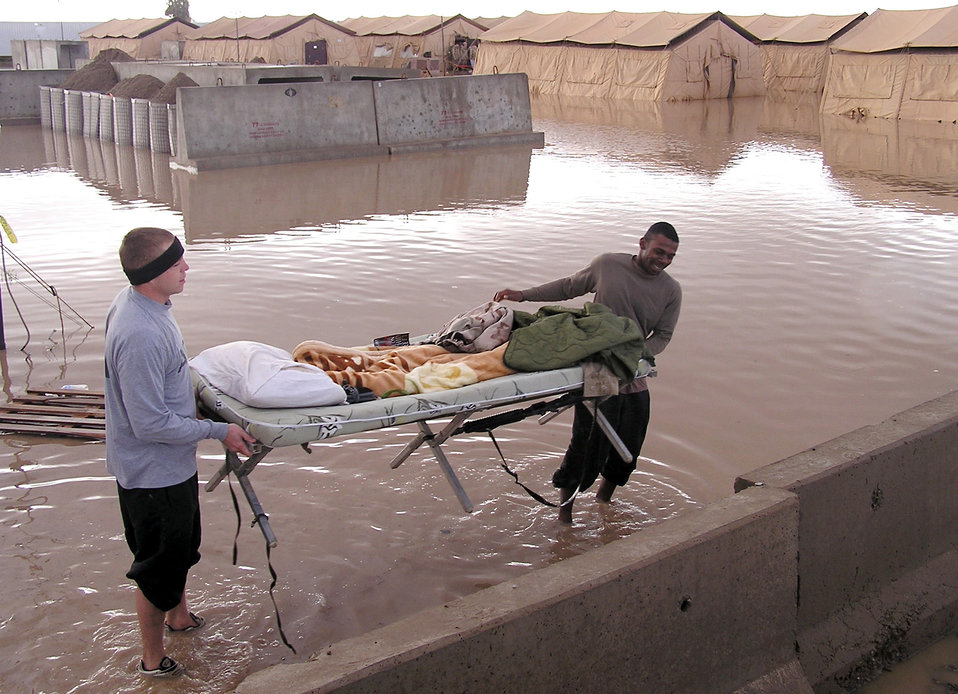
Water world

KIRKUK AIR BASE, Iraq -- Two Army soldiers remove a bunk from their flooded tent here Jan. 13. The base was hit by nearly 2 inches of rain overnight leaving many areas of the base, including tents for airmen and soldiers, deluged by water.